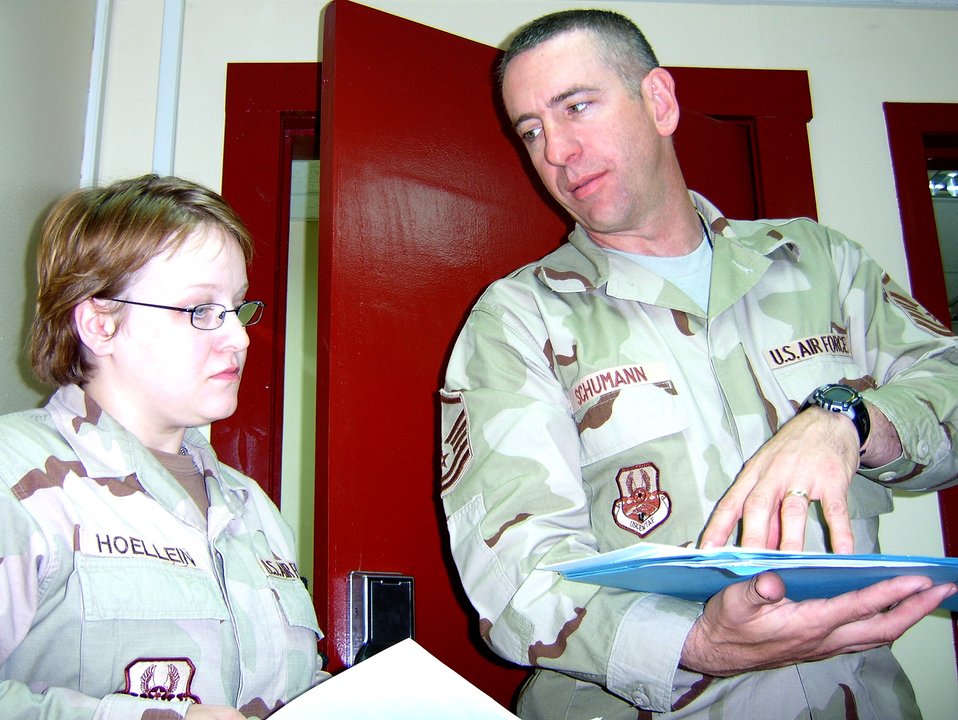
Sergeant keeps human relations in combat zone peaceful

Master Sgt. John Schumann discusses training with Master Sgt. Alexandra Hoellein, Military Equal Opportunity duty liaison during a July 25 site visit to Kirkuk Air Base, Iraq. Sergeant Schumann is the 332nd Air Base Wing Military Equal Opportunity chief and the only MEO Airman assigned to Iraq, so he is assisted by liaisons at geographically-separated units.